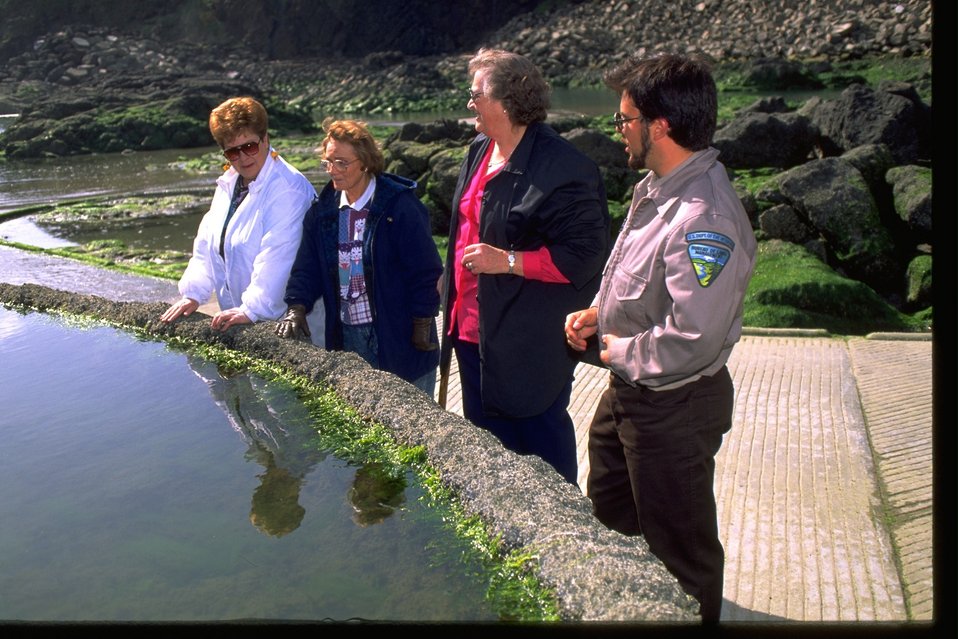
Programs at Yaquina Head Outstanding National Area accessible tidepools.